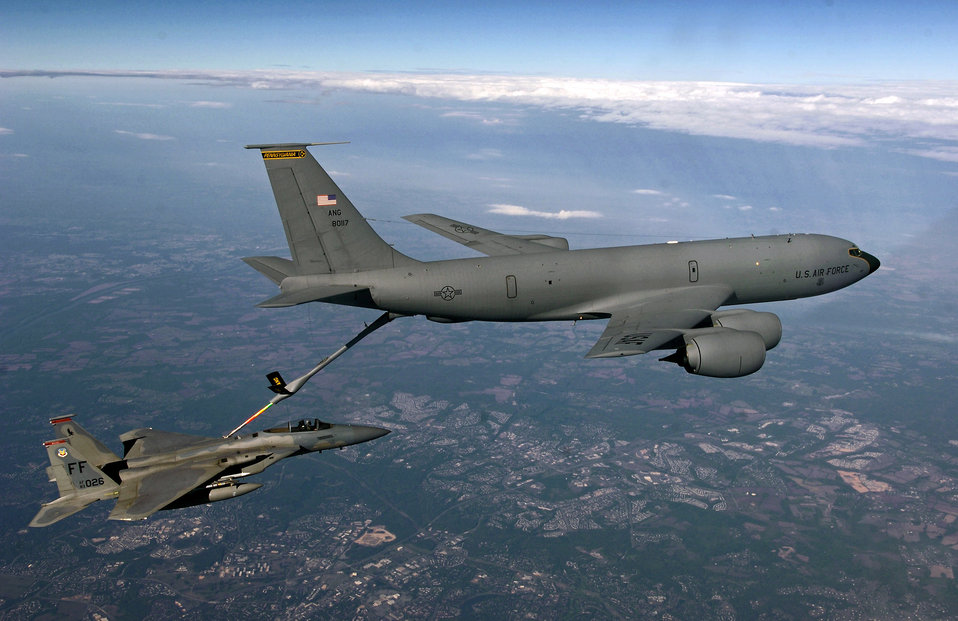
Fill ‘er up

During a combat air patrol mission, an F-15 Eagle piloted by Capt. Matt Buckner receives fuel from a KC-135 Stratotanker assigned to the Pennsylvania Air National Guard's 171st Air Refueling Wing Oct. 7 over Washington D.C. The mission was in support of Operation Noble Eagle. Capt. Buckner is assigned to the 71st Fighter Squadron at Langley Air Force Base, Va.